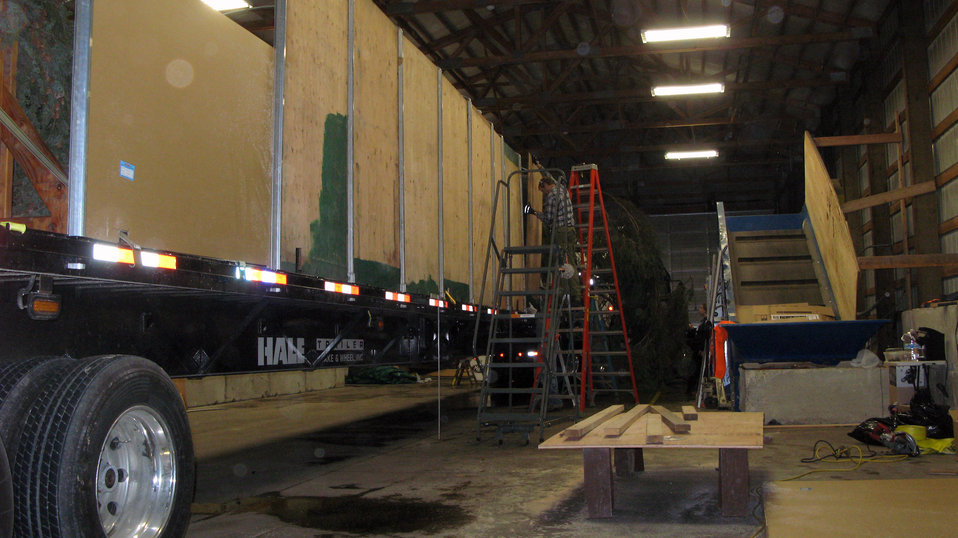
Colville National Forest personnel prepare the official 2013 Capitol Christmas Tree for transport on Nov. 3, 2013. The Capitol Christmas tree is an 88-foot tall Engelmann spruce that was harvested at Colville National Forest in Washington on Nov. 1, 2013.